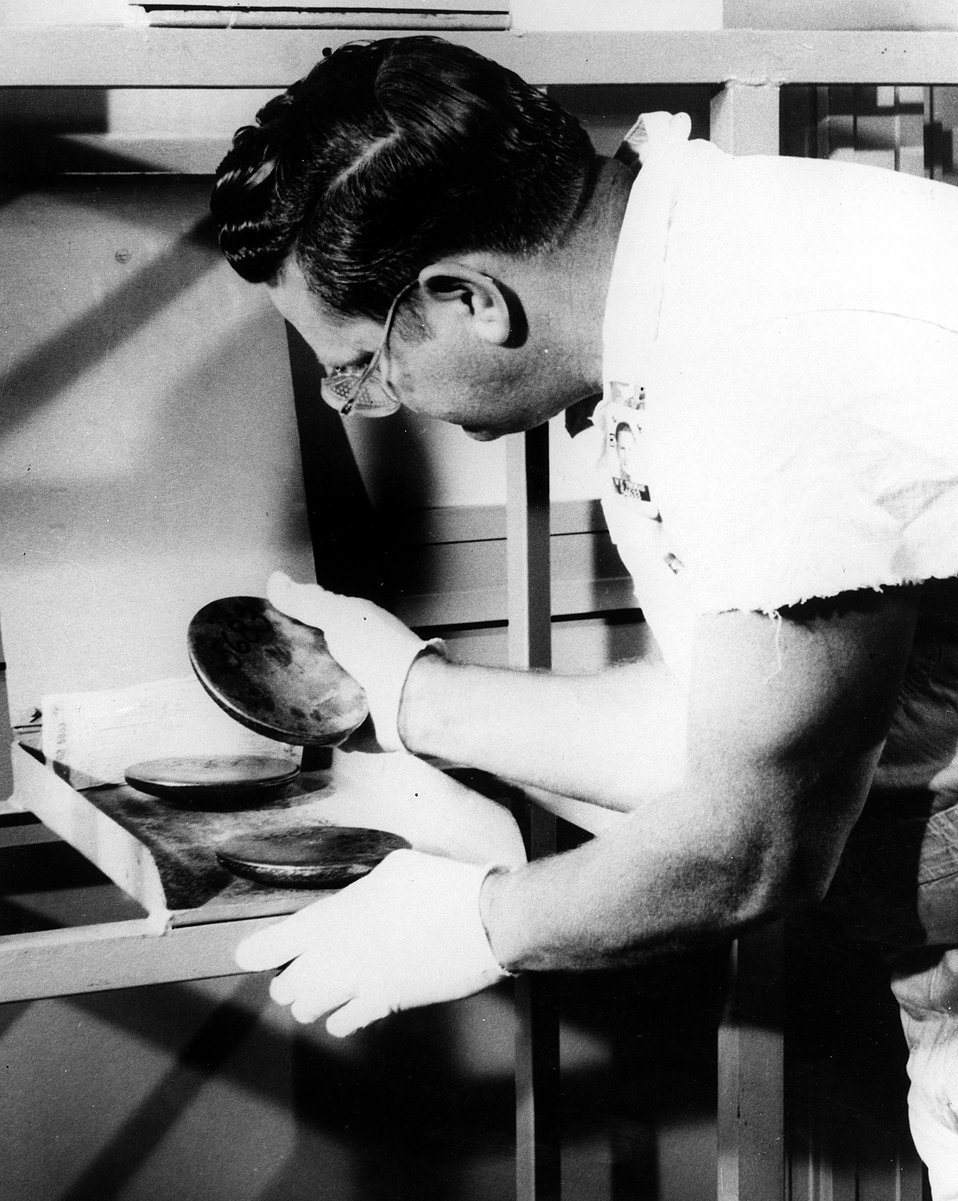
A worker at the Atomic Energy Commission's Y-12 Plant at Oak Ridge, Tennessee examines a 'biscuit' of uranium metal which contains about 93 percent U-235. Circa 1965.